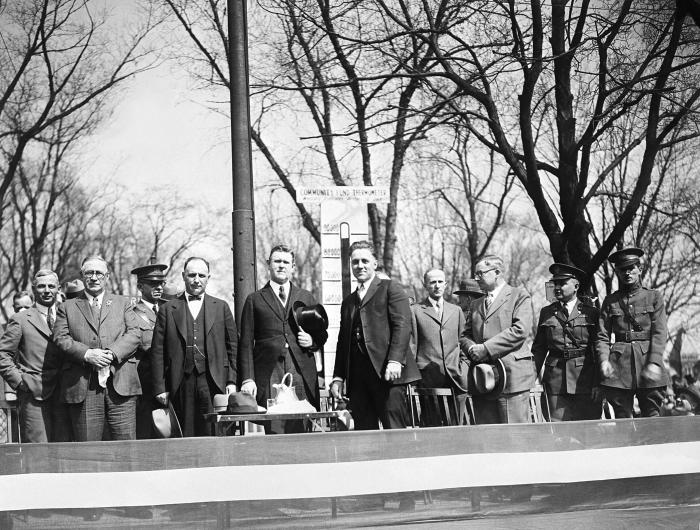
In this historic photograph, a group of what look to be elected officials, along with military officers, had assembled on a reviewing stand in observance of 'Child Health Day', in the state of Ohio. The original image was scanned from a glass lantern slide donated by the Minnesota Department of Health, and is one of a historical collection of documents and photographs devoted to observances of Child Health Day in the United States.